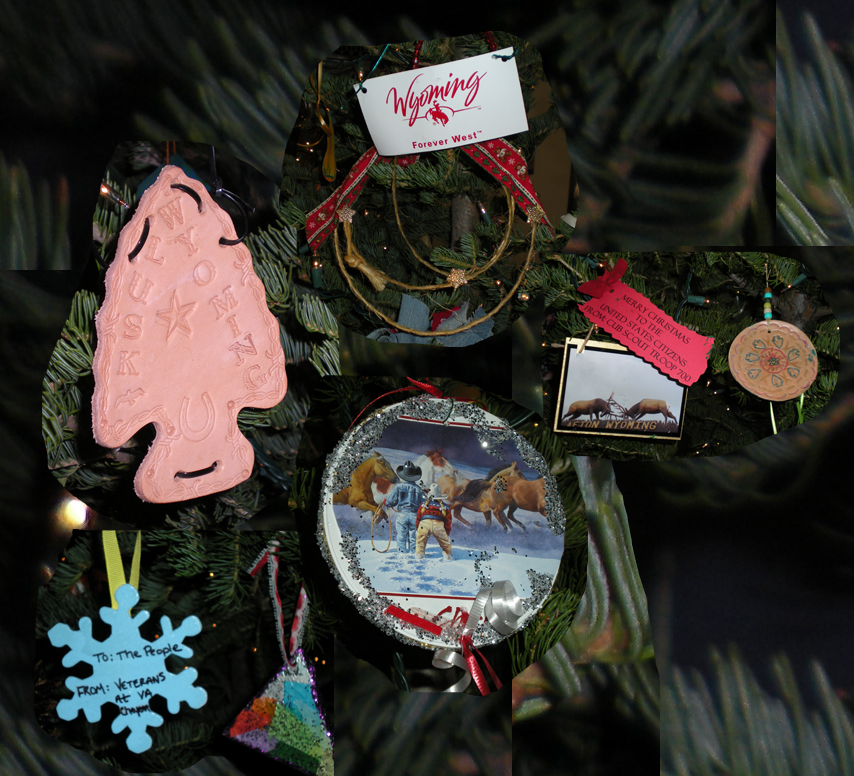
Ornaments1

A sampling of the ornaments made by the giving hands of Wyoming residents, including Cheyenne Veterans Hospital patients, Cub Scout members and grade school students.